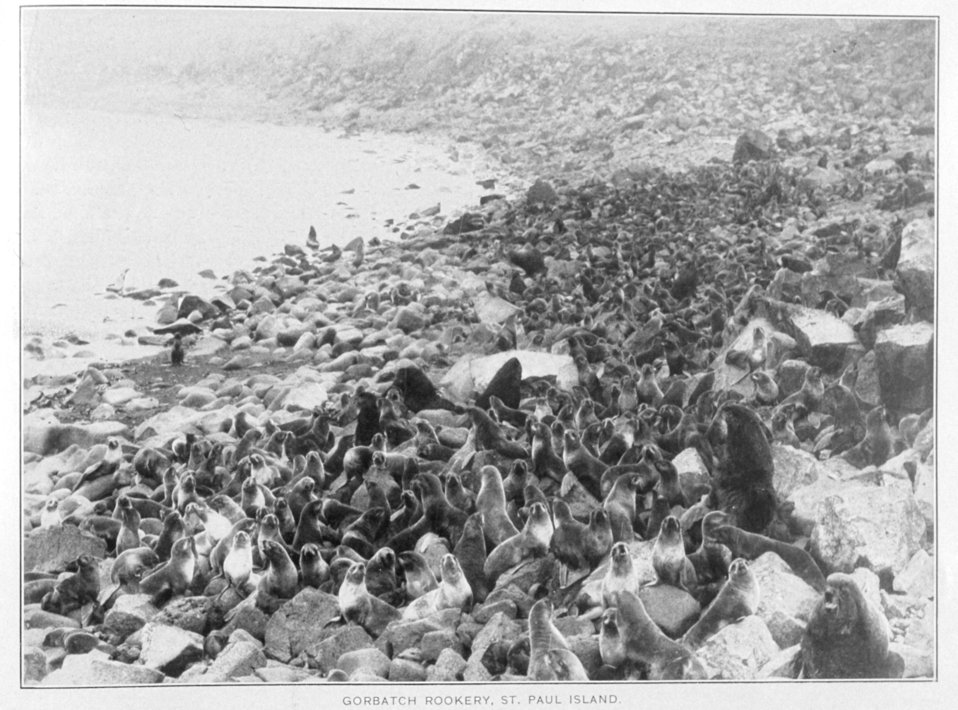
Gorbatch Rookery, St. Paul Island. In: 'Report of Alaska Investigations,' by E. Lester Jones, p. 132, 1914. Department of Commerce, Bureau of Fisheries. Library Call No. 639: 945 J77.